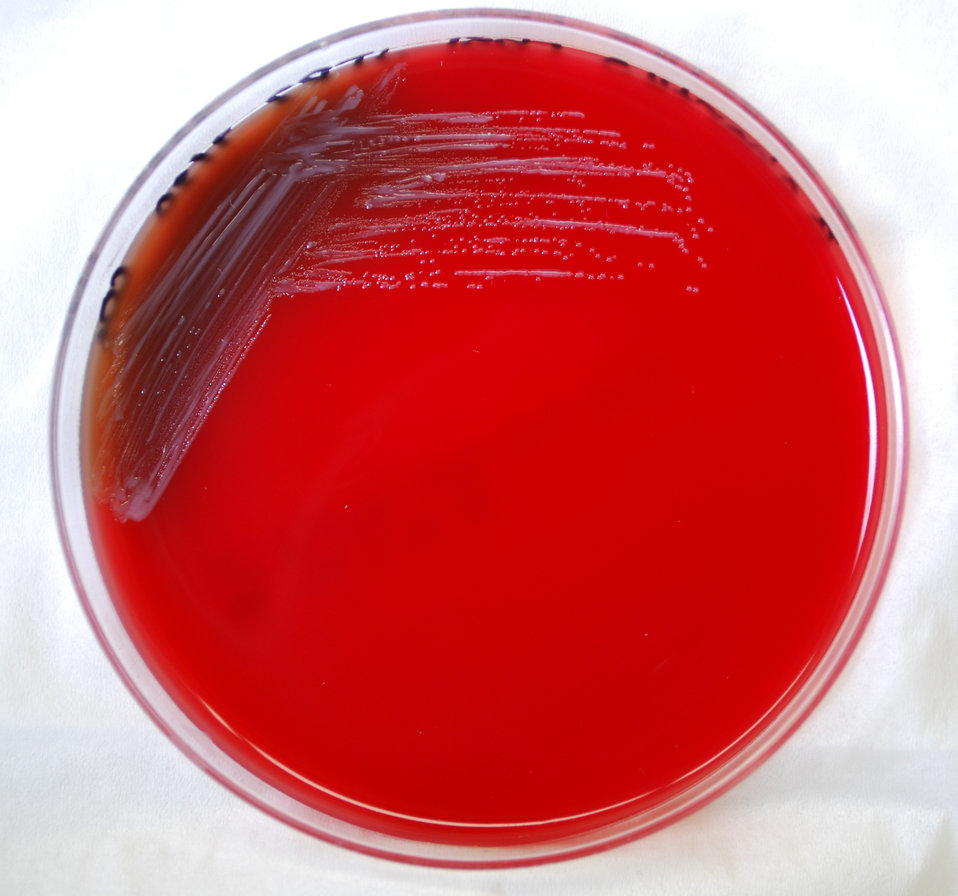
This photograph depicts the colonial morphology displayed by Gram-negative Brucella abortus bacteria, which was grown on a medium of sheep blood agar (SBA), for a 48 hour time period, at a temperature of 37�C, while incubated in a CO2 incubator. For a closer view of these bacterial colonies, see PHIL 12230.